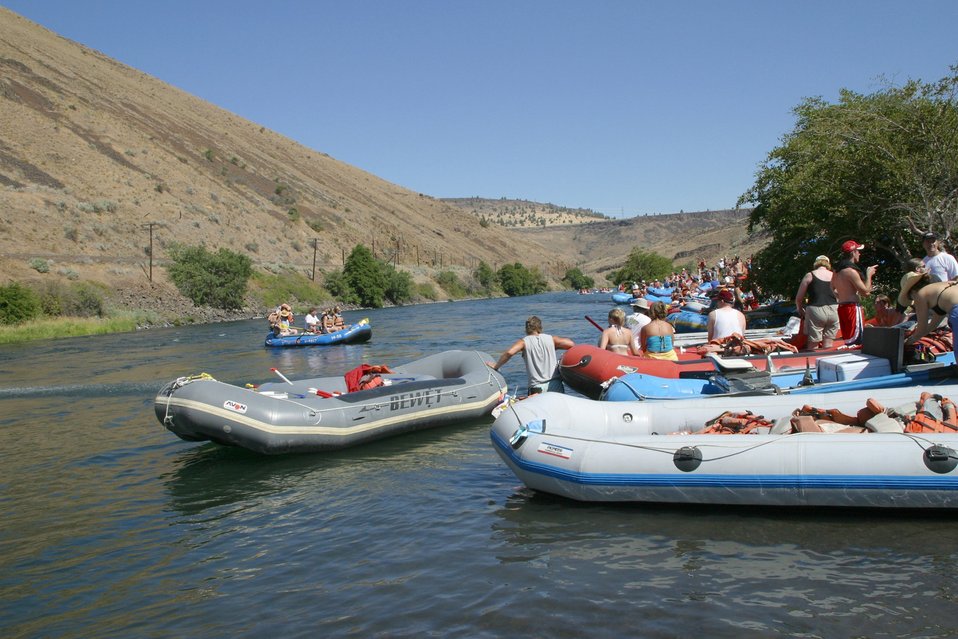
Over 200,000 people a year float the Lower Deshutes River.